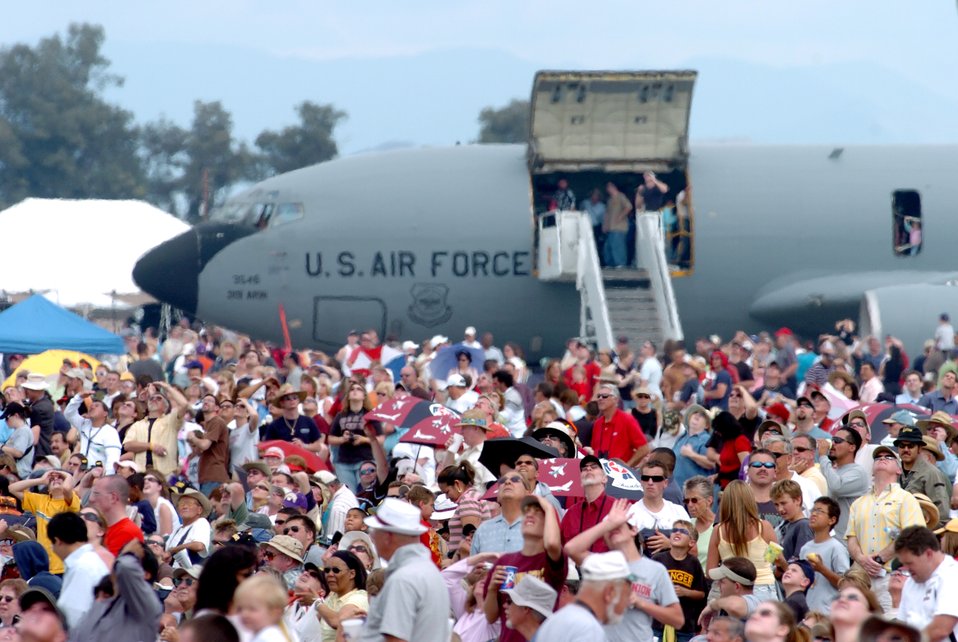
Air Force Week